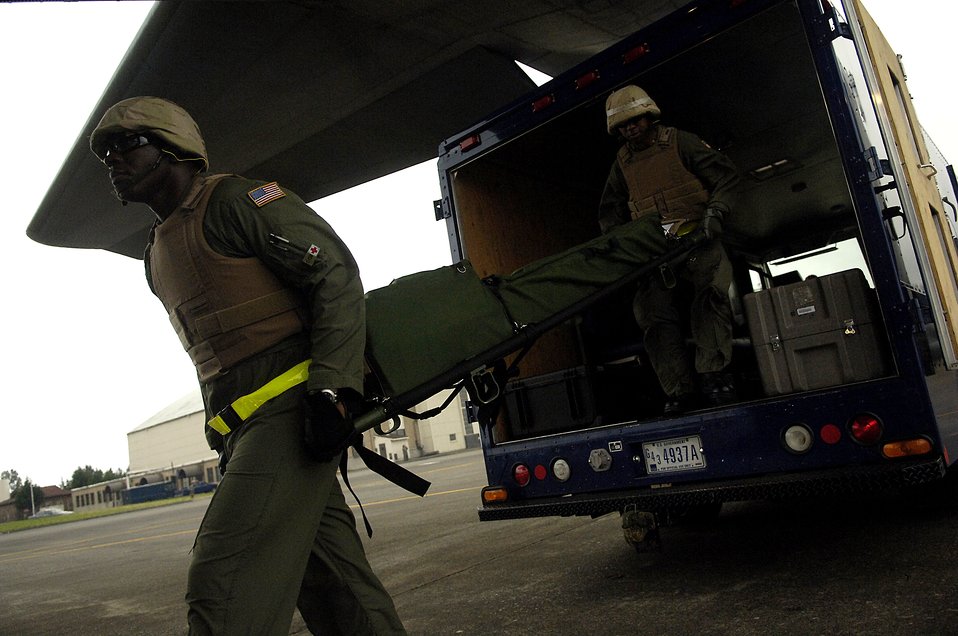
Aeromedical evacuation teams test lifesaving skills at Rodeo

Tech. Sgt. Kermit McLauchin and Tech. Sgt. Ricardo Brown load medical supplies on a C-130 Hercules for a aeromedical evacuation competition July 23 during Air Mobility Command's Rodeo 2007 at McChord Air Force Base, Wash. Rodeo 2007 is a readiness competition of U.S. and international mobility air forces. The NCOs are medical technicians assigned to the from the 375th Aeromedical Evacuation Squadron at Scott AFB, Ill.